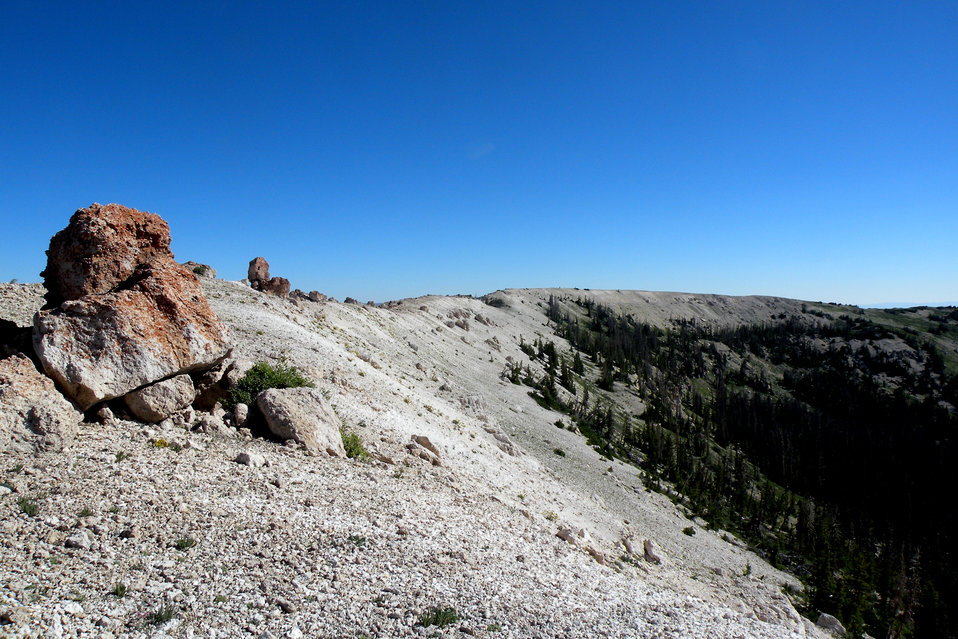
Heliotrope milkvetch - Habitat (Astragalus montii)

Heliotrope Mountain, UT. The Heliotrope milkvetch is endemic to apline areas in central Utah where it is found on windblown ridges between 10,500 ft. and 11,000 ft. in elevation.